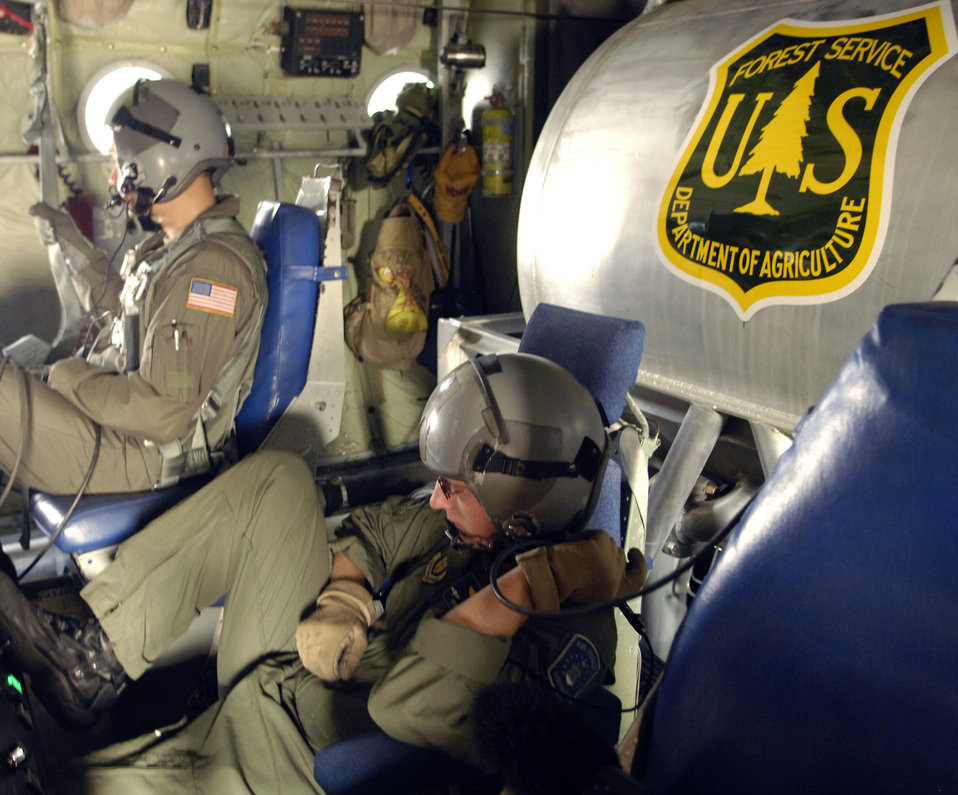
C-130s fight California wildfires

Master Sgt. Tom Freeman (left) and Tech. Sgt. Lamont Wood prepare to deploy 3,000 gallons of fire retardant Oct. 24 over the Poomacha fire in North San Diego County, Calif. The C-130 Hercules and crew are assigned to the 302nd Airlift Wing from Peterson Air Force Base, Colo. The aircraft launched from Channel Islands Air National Guard Station, Calif. Air Force Reserve Command officials are participating in the Southern California firefighting effort.